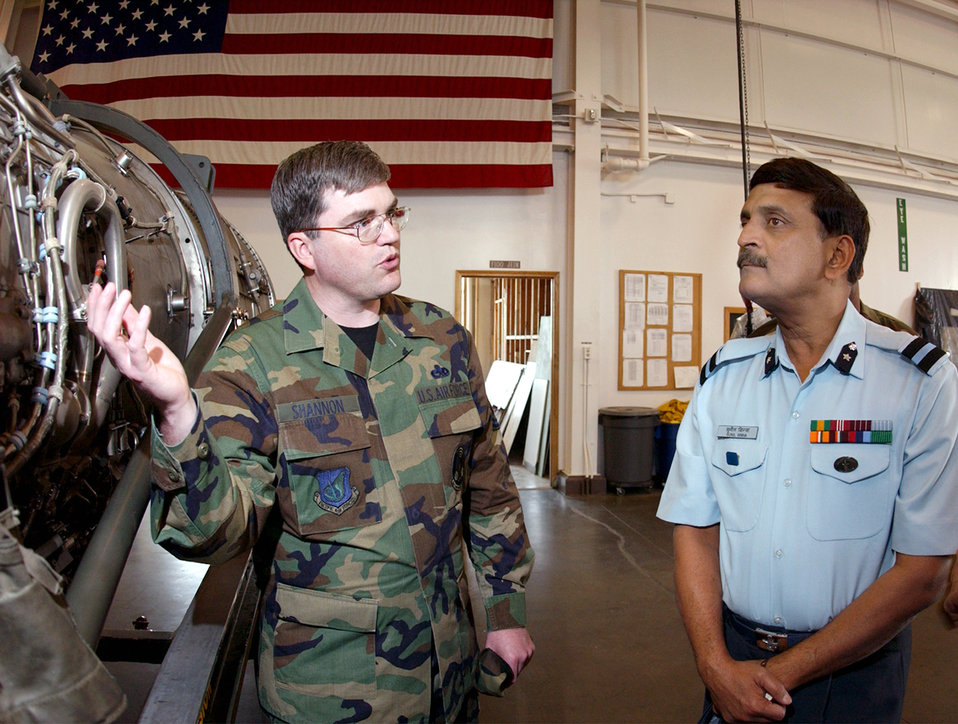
Engine tour

ELMENDORF AIR FORCE BASE, Alaska (AFPN) -- Chief Master Sgt. Timothy Shannon (left) explains the engine maintenance process to Indian air force Air Commodore S.K. Sinha during a visit here May 21. A small group from the Indian air force visited here as part of Pacific Air Forces' effort to enhance security cooperation between the United States and India. Shannon is assigned to the base's 3rd Component Maintenance Squadron.